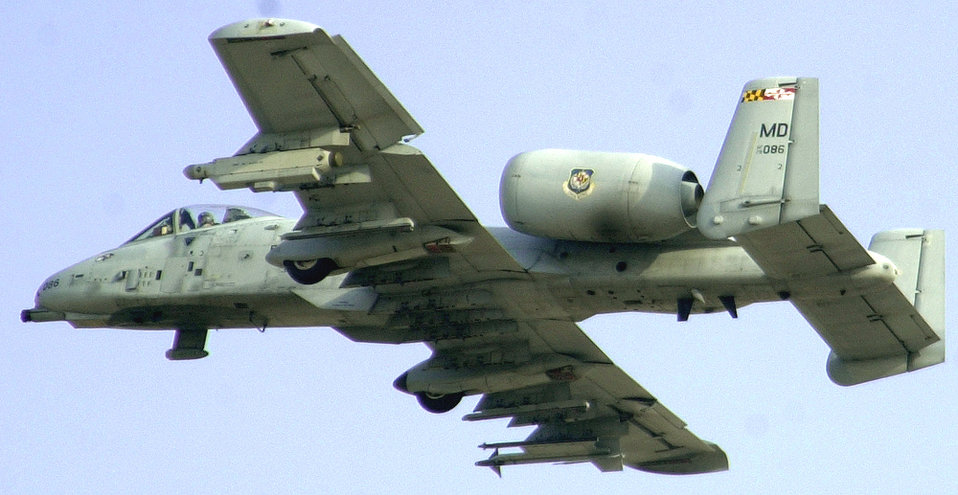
A-10 practice run

1990's -- OPERATION SOUTHERN WATCH -- An A-10 Thunderbolt II flies over a practice range near Al Udairi, Kuwait in support of Operation Southern Watch. This Maryland Air National Guard A-10 is dropping inert bombs during a practice run.